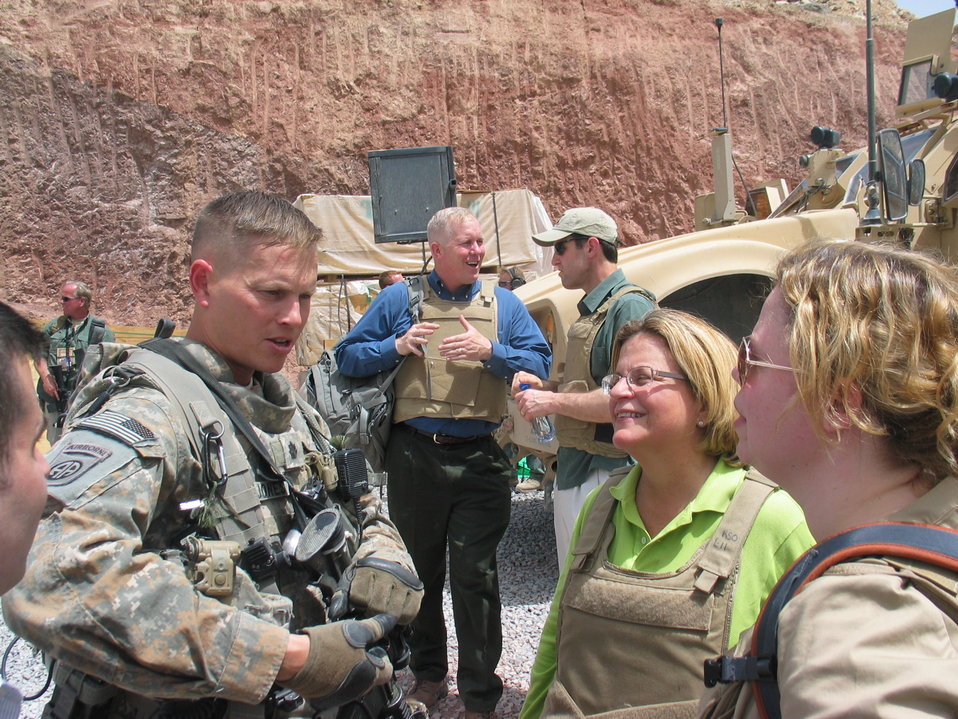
CODEL Berman